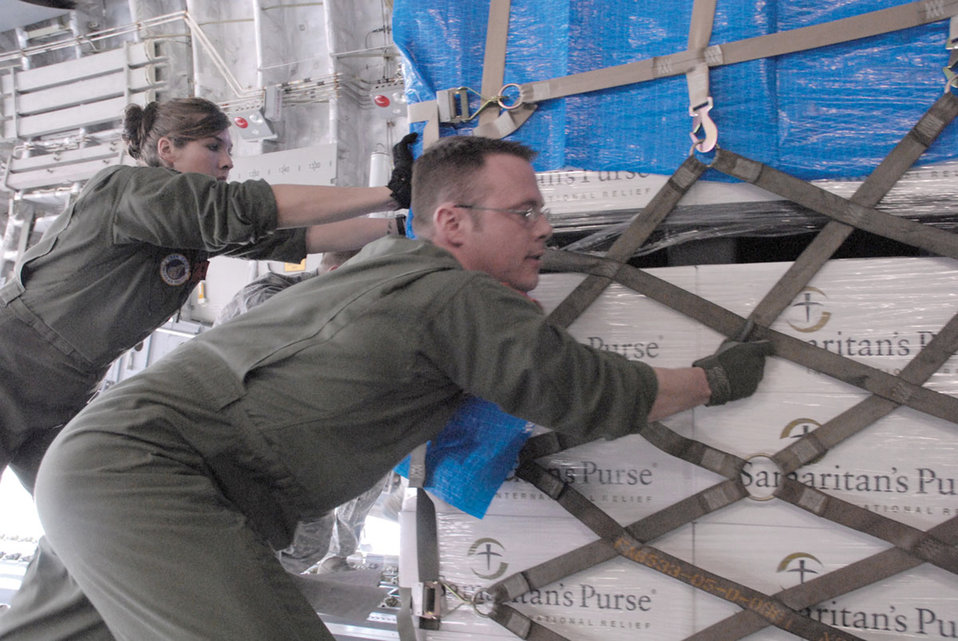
Japan relief

Capt. Allen Morris and Staff Sgt. Carol Kemmis help load the first humanitarian relief supplies to be delivered to Sendai, Japan, from Yokota Air Base, Japan, by a C-17 Globemaster III March 20, 2011. Morris is a 517th Airlift Squadron pilot. Kemmis is a 703rd Aircraft Maintenance Squadron crew chief.